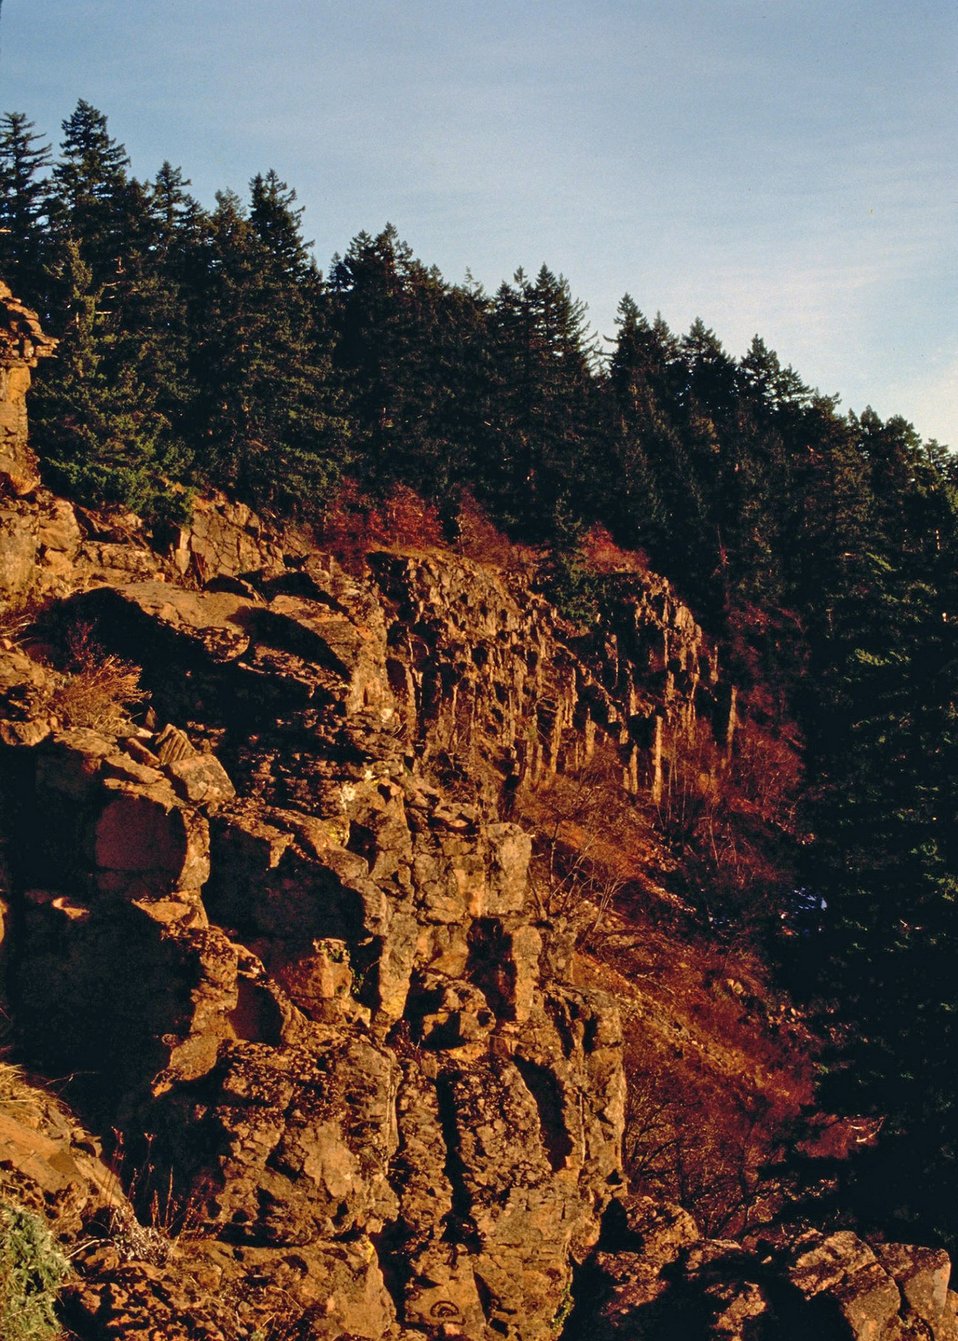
View of Flounce Rock.